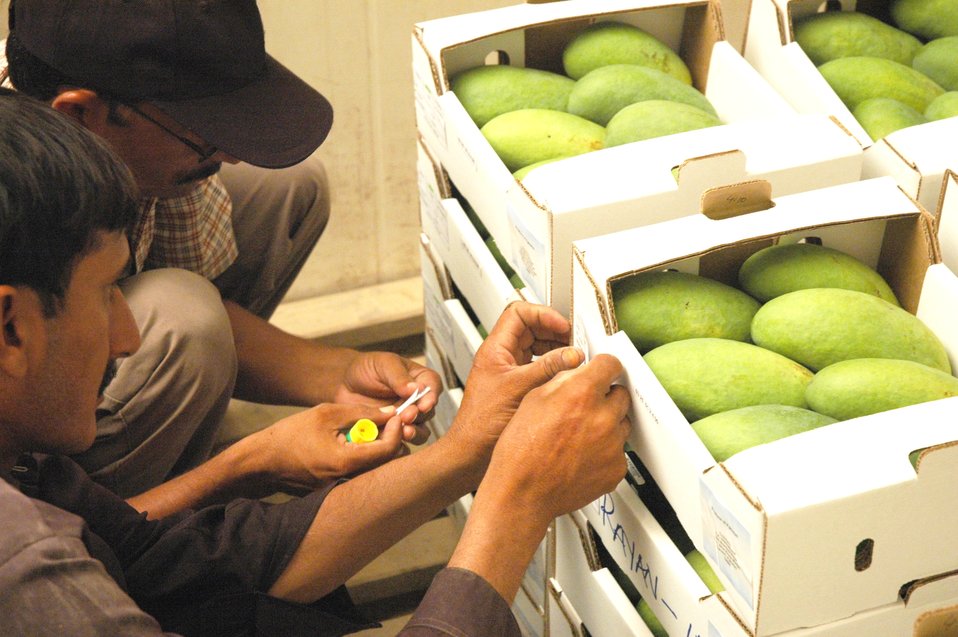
USAID helps Pakistan’s mangoes reach new export markets - 4

Through use of modern technology and techniques made available by USAID, locally produced mangoes are being prepared for sea shipments to major European markets for the first time.